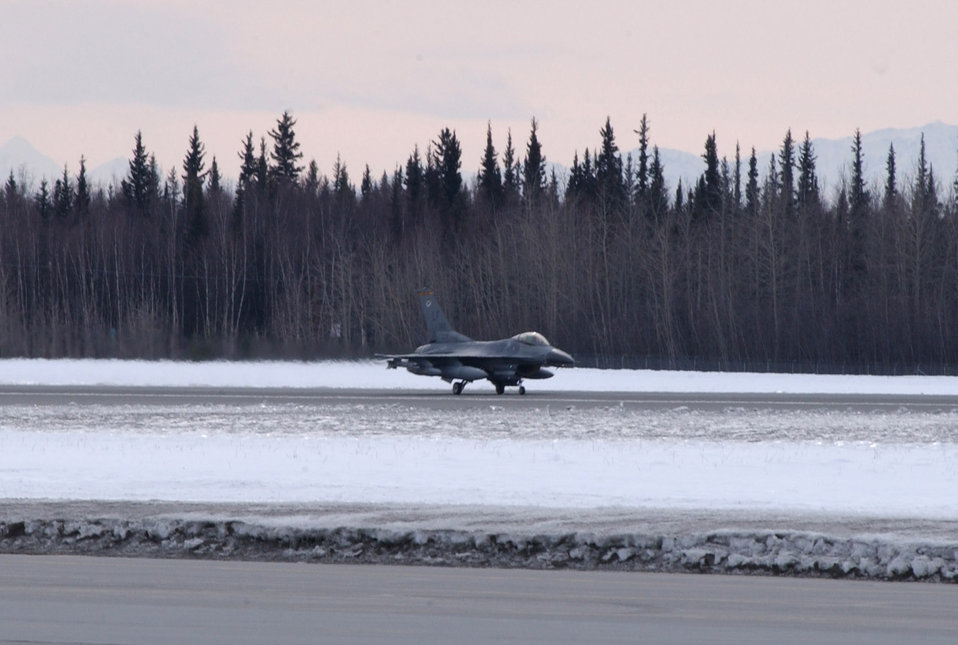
Red Flag forces huddle up at Eielson

An F-16 Fighting Falcon touches down on the runway for Red Flag-Alaska 07-1 April 3 at Eielson Air Force Base, Alaska. More than 1,300 military members from the United States, France and Australia will train together for two-weeks on the Pacific Alaskan Range Complex during Red Flag-Alaska. Air operations are flown out of Eielson and Elmendorf Air Force bases. This F-16 is from the 61st Fighter Squadron based at Luke AFB, Ariz.